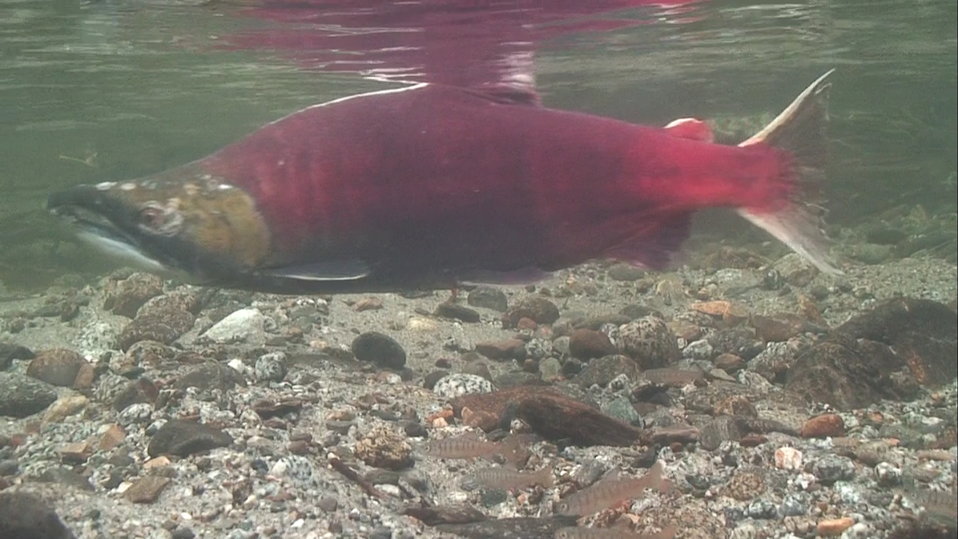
male sockeye Steep Ck

The male sockeye salmon has a larger head with elongated jaws, hooked snouts and strongly developed teeth.